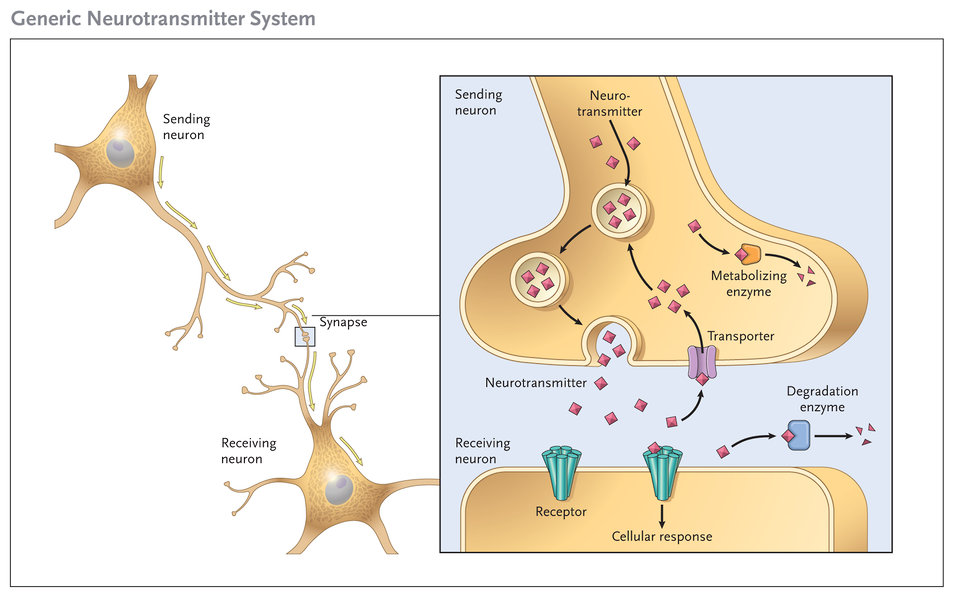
Generic Neurotransmitter System

Neurotransmitters carry signals from neuron to neuron across synapses.